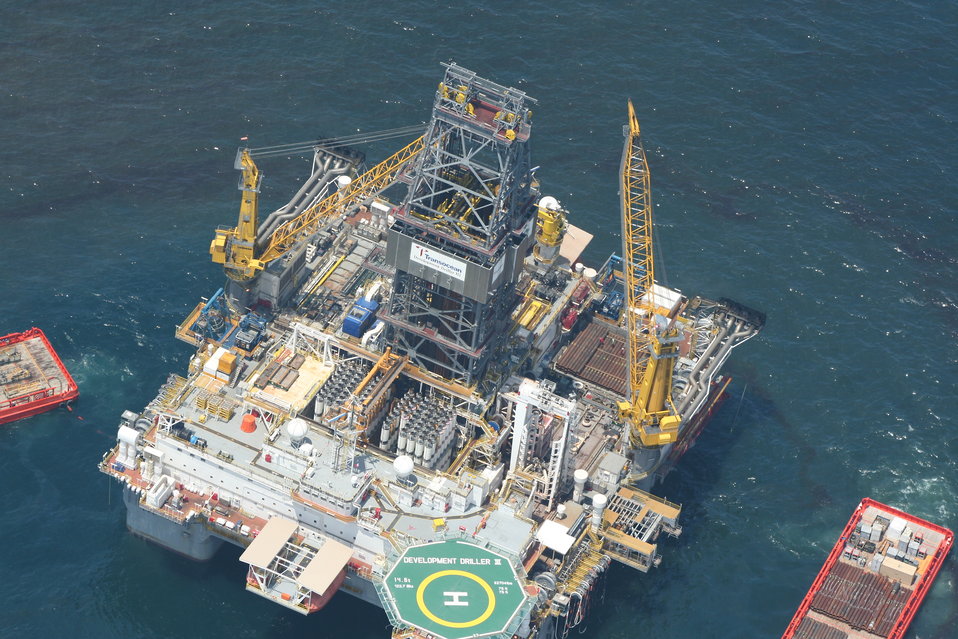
Flight 8 141